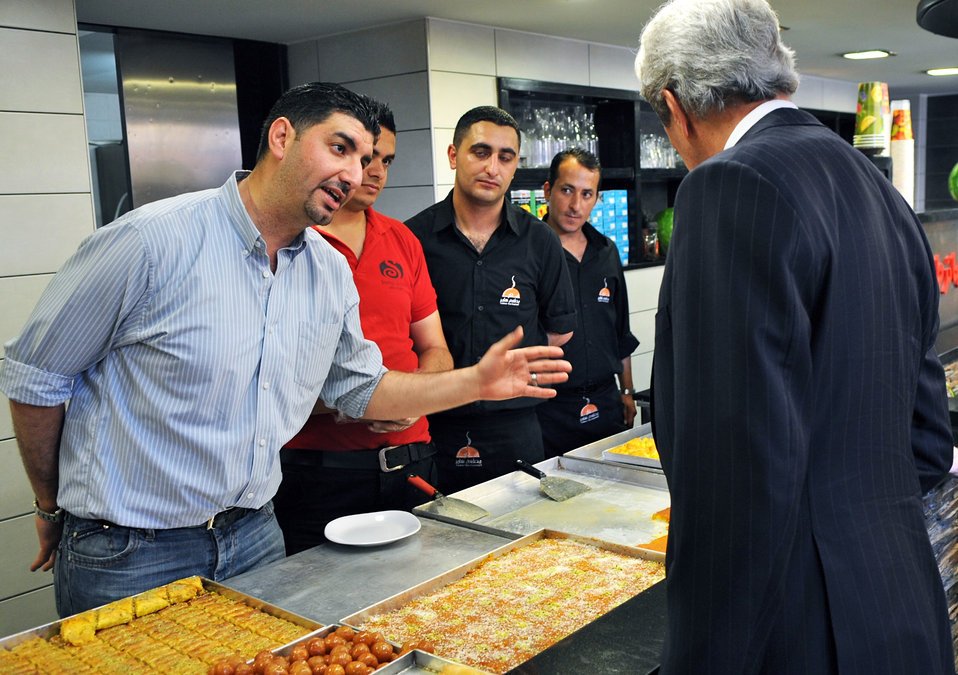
Secretary Kerry Picks a Sweet To Enjoy

U.S. Secretary of State John Kerry makes a tough decision on which sweet to enjoy at a shop in Ramallah on May 23, 2013.